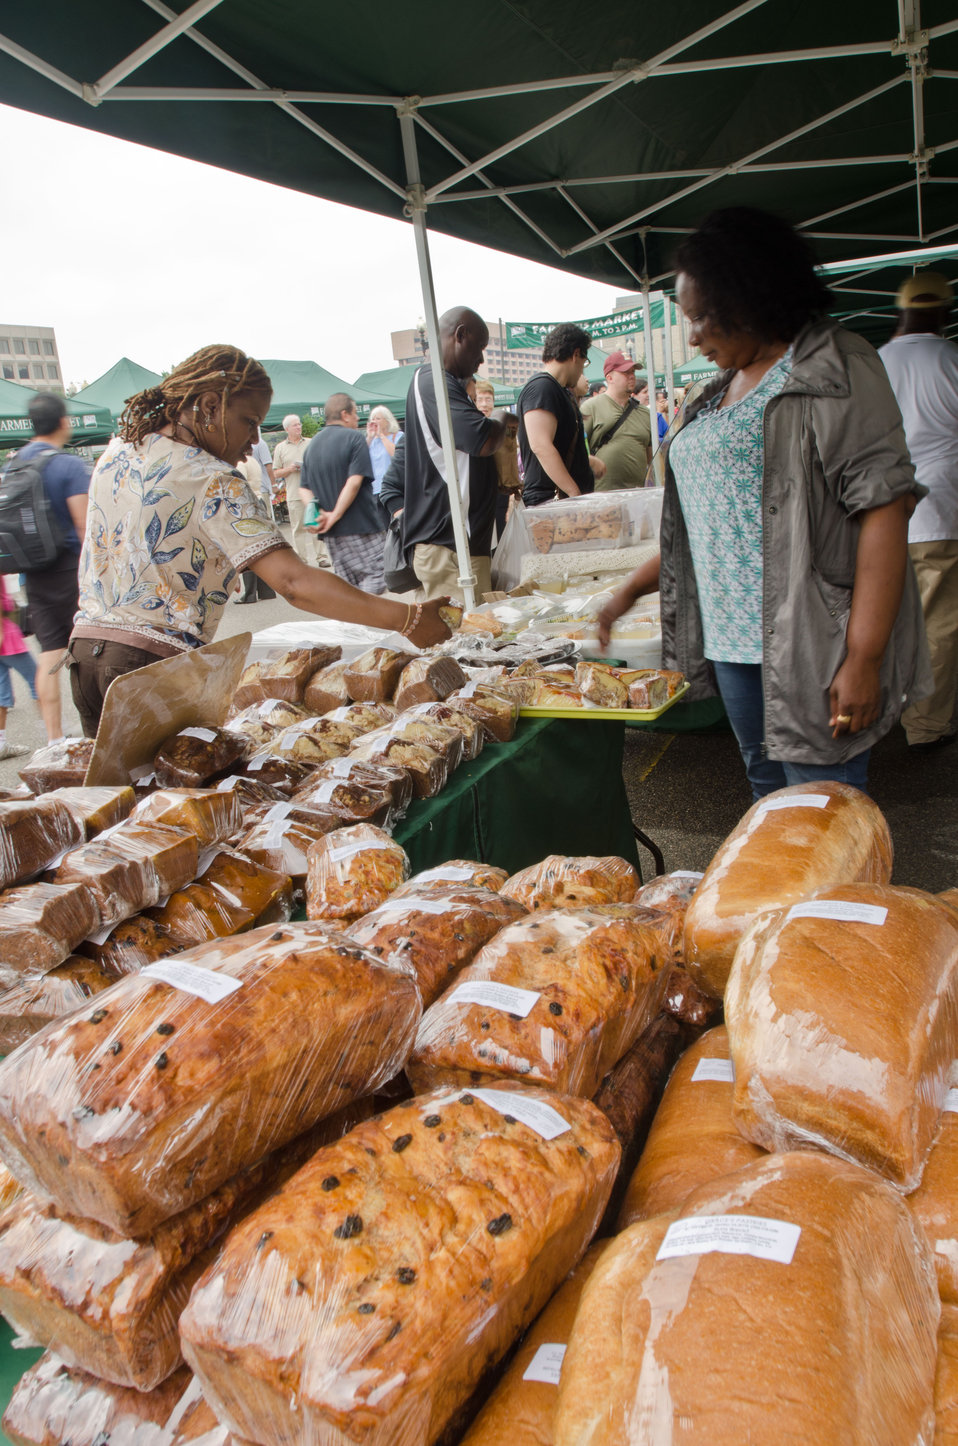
Grace's Pastries serve customers during the U.S. Department of Agriculture (USDA) summer farmers market opening of the 17th season at the USDA Whitten Building east parking lot in Washington, D.C., on Friday, May 31, 2012. This year's theme is Grow, Healthy, Eat Healthy & Be Healthy. USDA and Fuel Up to Play 60, in partnership with the National Dairy Council and the National Football League, invited residence, visitors and local school children to participate in opening day activities. Hip Hop Public Health featuring Easy A.D. from Cold Crush Brothers and disk jockey Artie Green play music and invite people to get up on stage to dance or hula hoop to get active. D.C. Truck Farm help people know from what plants, that certain herbs, fruit and produce come from by giving tail-gate tours of the garden growing in the bed of their pickup truck. The Peoples Garden Initiative and USDA Executive Master Gardeners gave away a variety of fruit and produce seedlings to include the Tomato ‘Abraham Lincoln’ in celebration of the USDA 150th Anniversary and to share their harvest. New features for 2012 include an on-site sign language interpreter, a hand washing station, and a USDA-certified organic vendor. Other products selling today are fresh fruits, vegetables, herbs, baked goods, meats, kettle popcorn, local honey, hand-made soap and more.